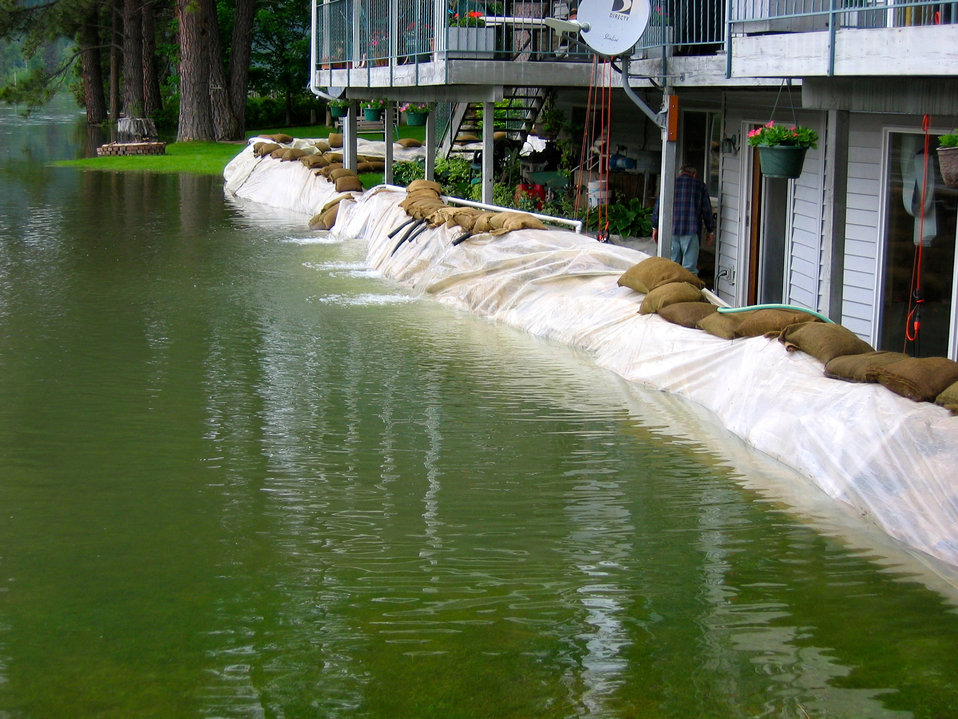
Fairchild Airmen save homes from flooding

The home of Ken and Carol Wendt is shown June 17, 2011, near the Pend Oreille River at Cusick, Wash. Forty student candidates and instructors from the 336th Training Group Survival Evasion Resistance Escape School at Fairchild Air Force Base, Wash., filled roughly 10,000 sandbags in Pend Oreille County, Wash., June 9, 2011, reportedly saving three homes from being flooded.